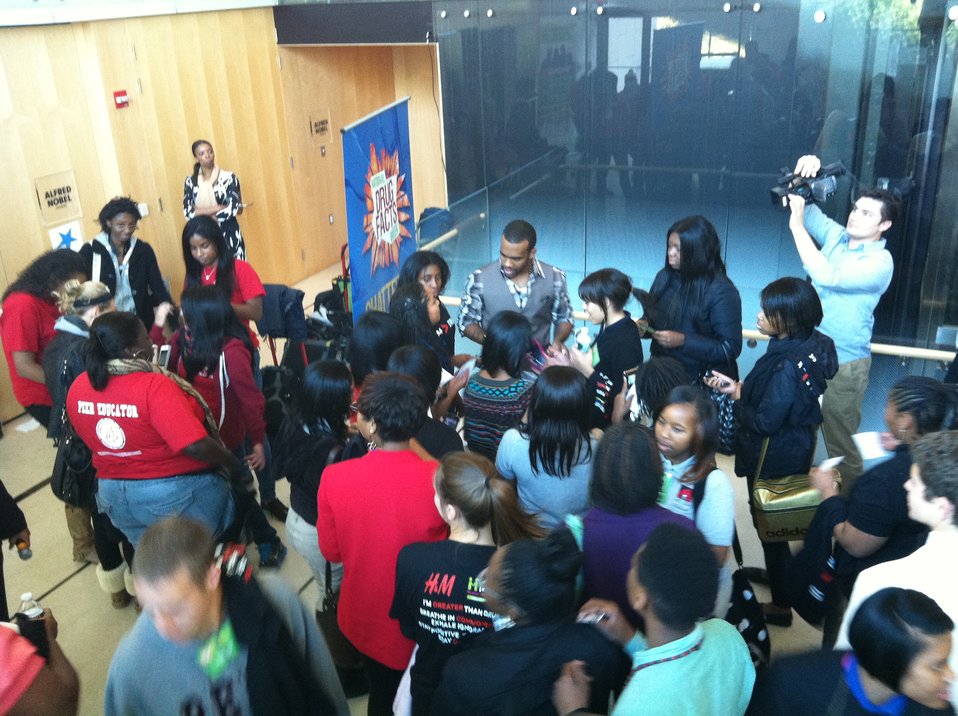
Mentor 19